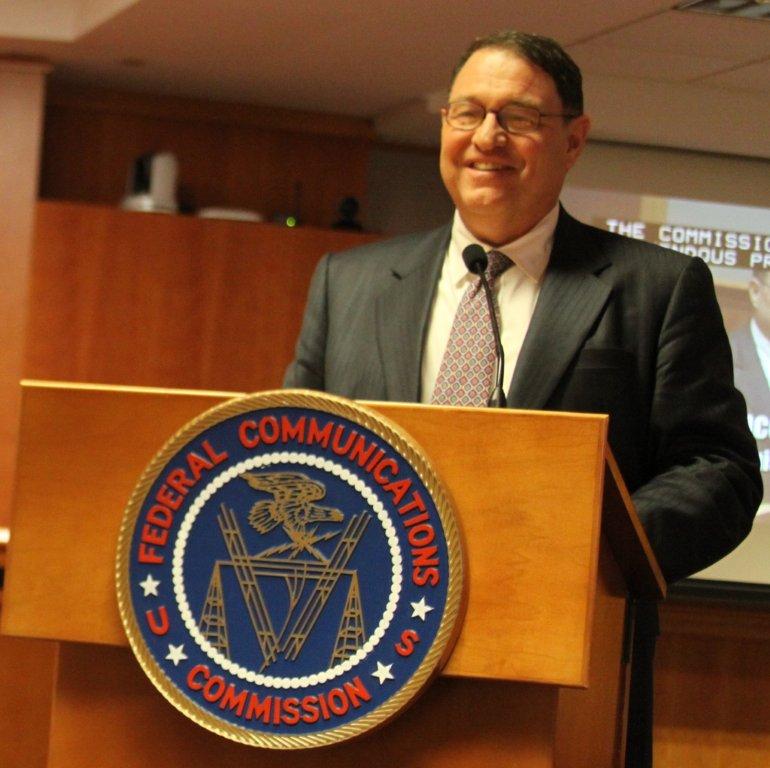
Secretary Larry Strickling, National Telecommunications and Information Administration